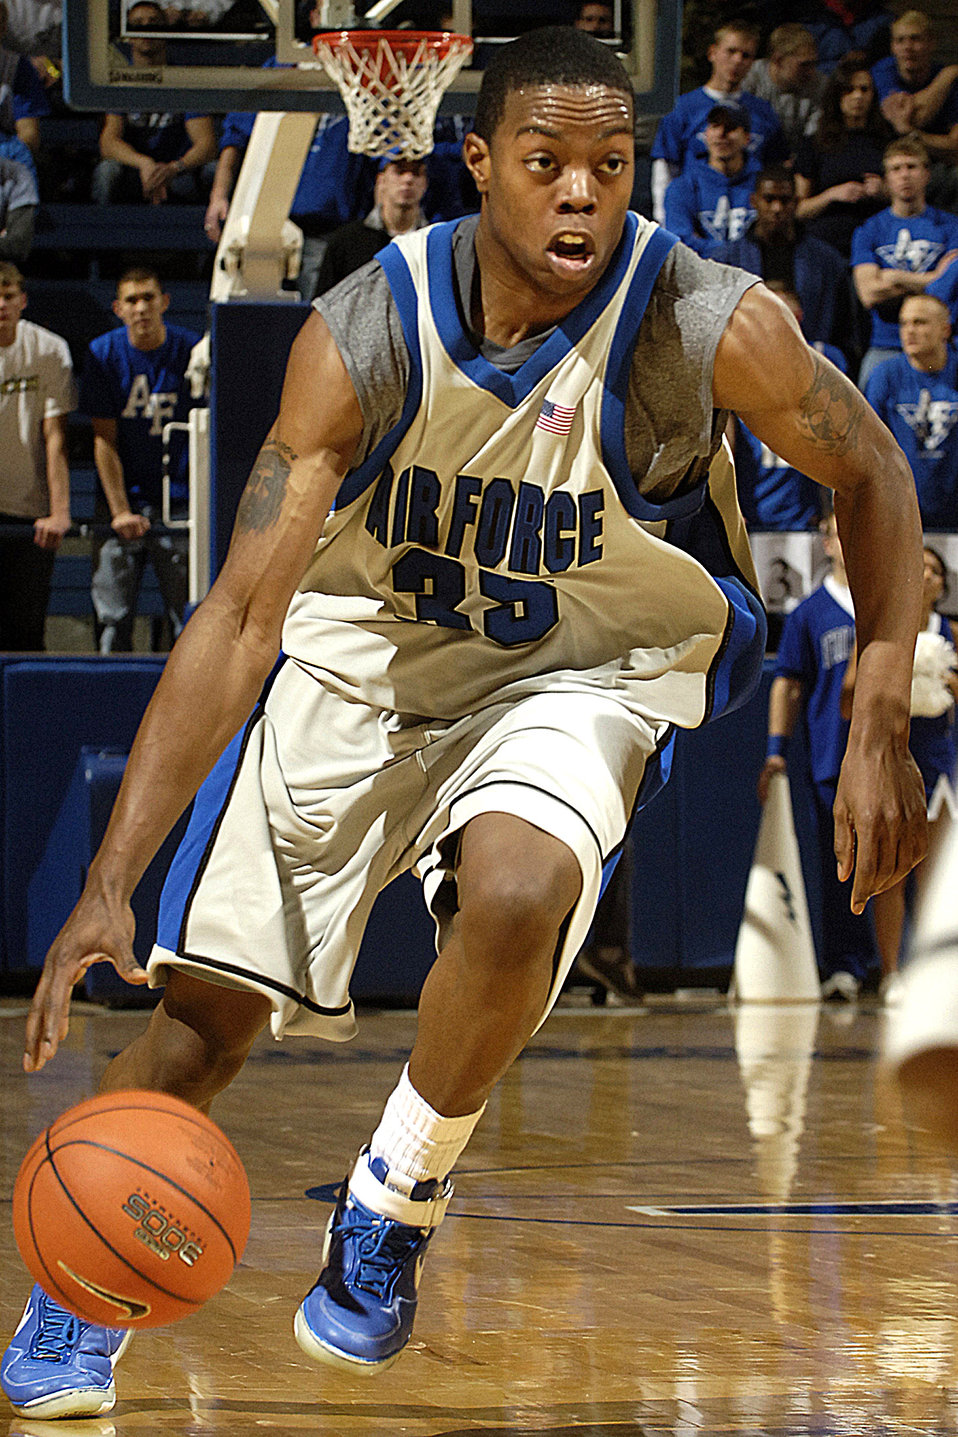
Academy defeats UNLV 65-53

U.S. Air Force Academy freshman guard Evan Washington drives down court as the Falcons beat the University of Nevada Las Vegas, 65-53, Jan. 13 in a Mountain West Conference game in Clune Arena at Colorado Springs, Colo.